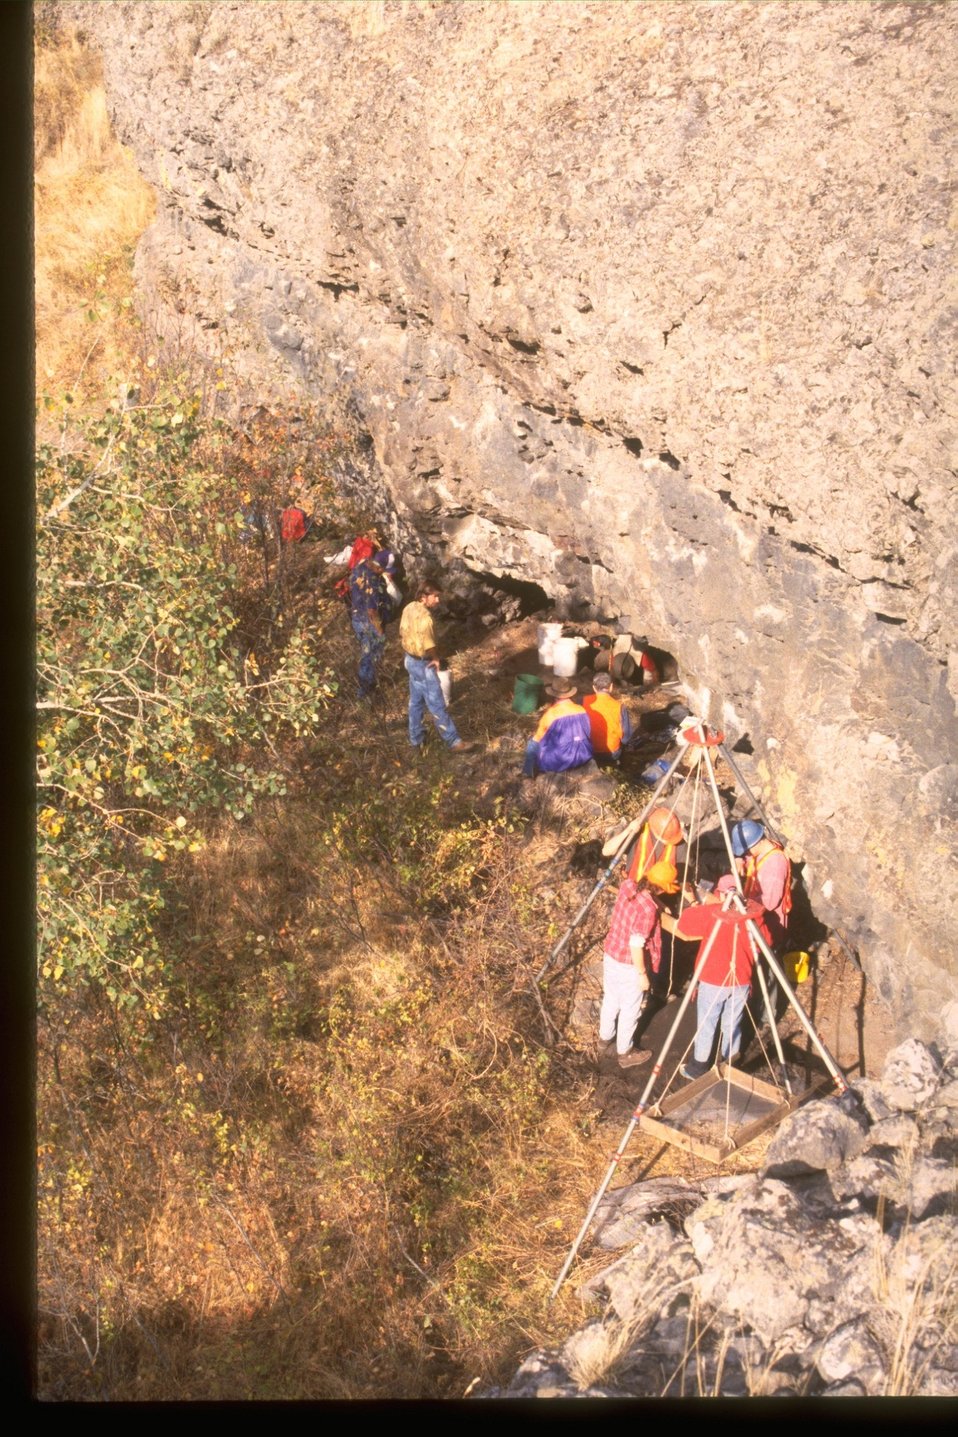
Eastern Washington University students excavating rockshelter at Fishtrap Man. Area, Washington.